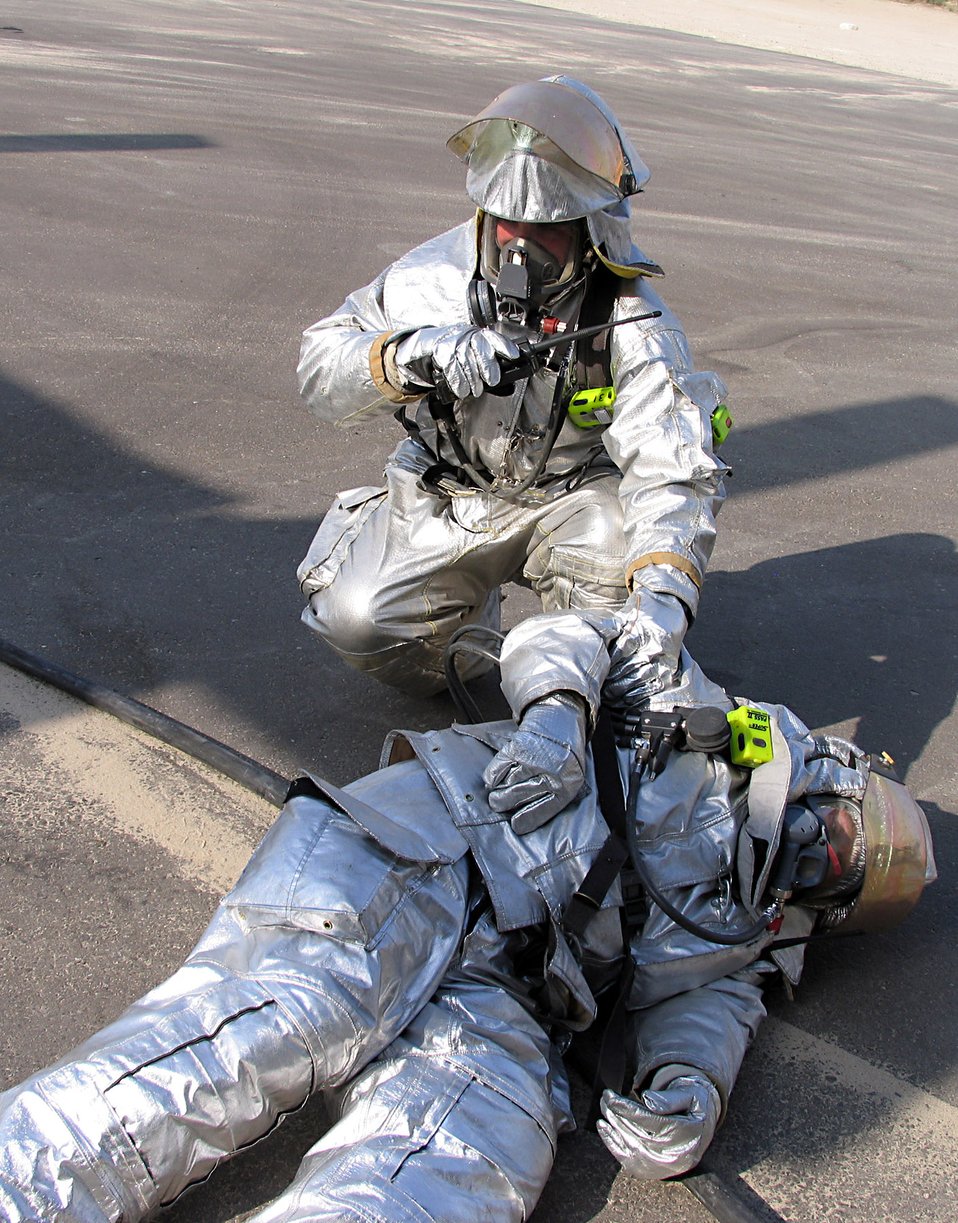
Firemen ready

SOUTHWEST ASIA (AFPN) -- Senior Airman Brandon Batista radios for assistance after rescuing a fellow firefighter from a simulated C-130 Hercules fire. The fire department trains throughout the week to prepare for real-world incidents. Airman Batista is with the 386th Expeditionary Civil Engineer Squadron fire department.